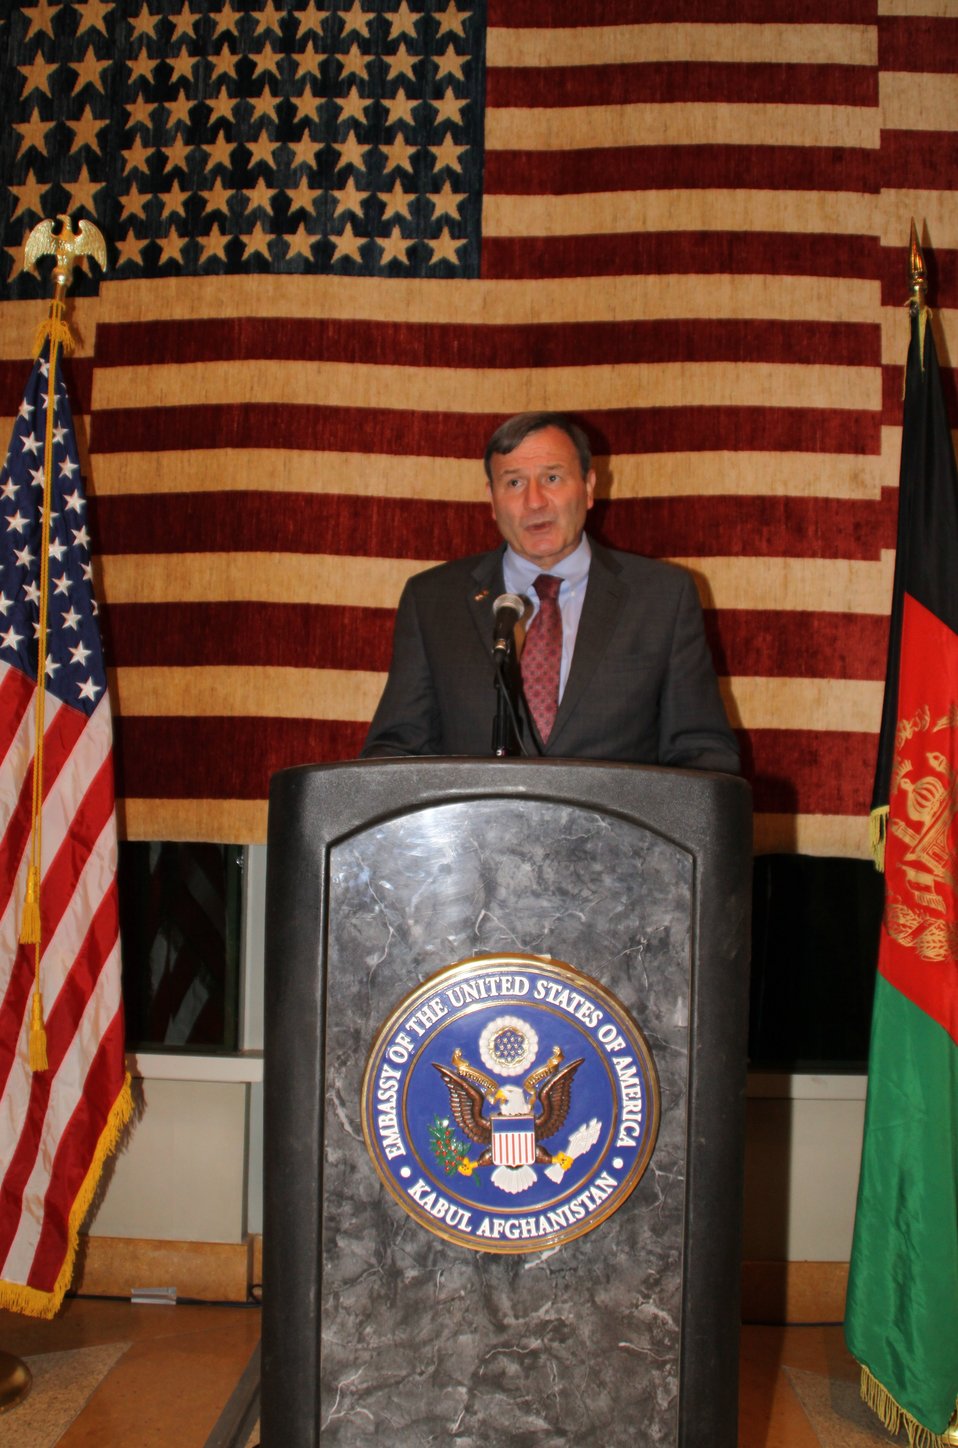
US Embassy Town Hall July 21, 2010